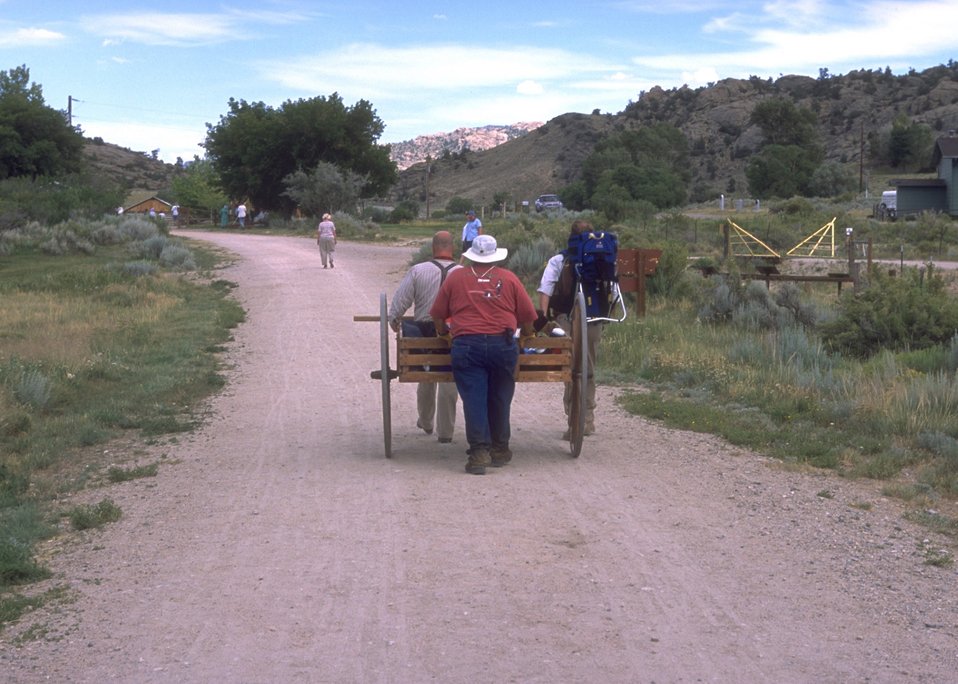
Handcart re-enactment near Martin's Cove, Rawlins Field Office.